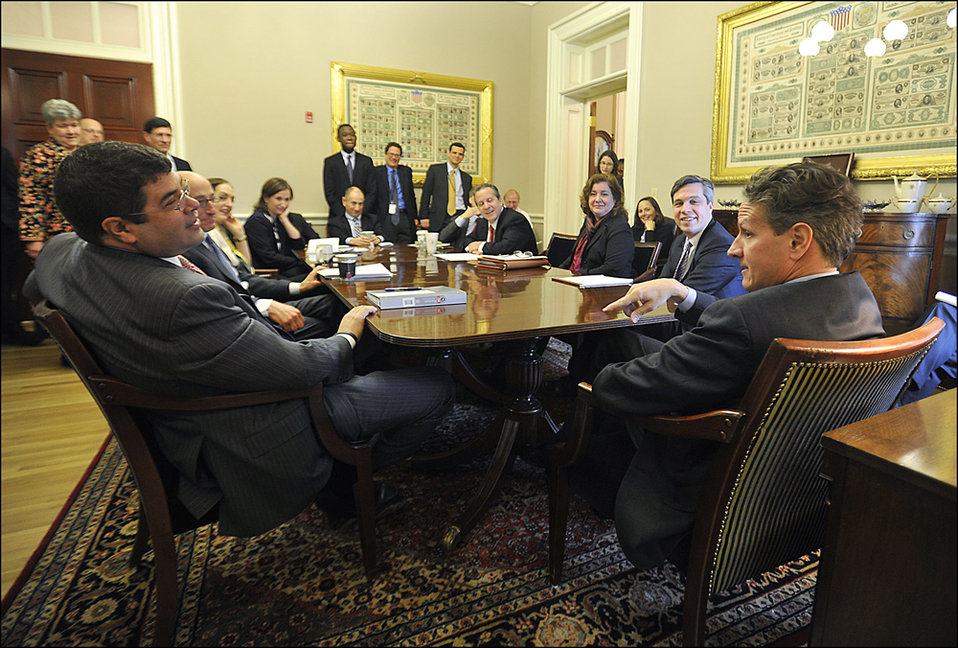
Secretary Geithner presides over his final senior staff meeting as Treasury Secretary – an expanded meeting including several Treasury alums and special guests. Deputy Secretary Neal Wolin (seated to Geithner’s left) will become Acting Secretary on Saturday, January 26.